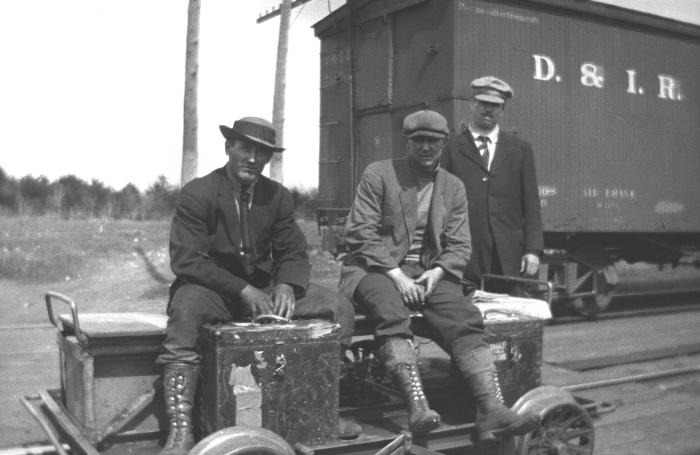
The three men posed in this historic 1916 photograph, were on their way to conduct field studies involving the acquisition, and testing of water samples. Note the packed traveling laboratory case situated at the feet of the man seated on the left.